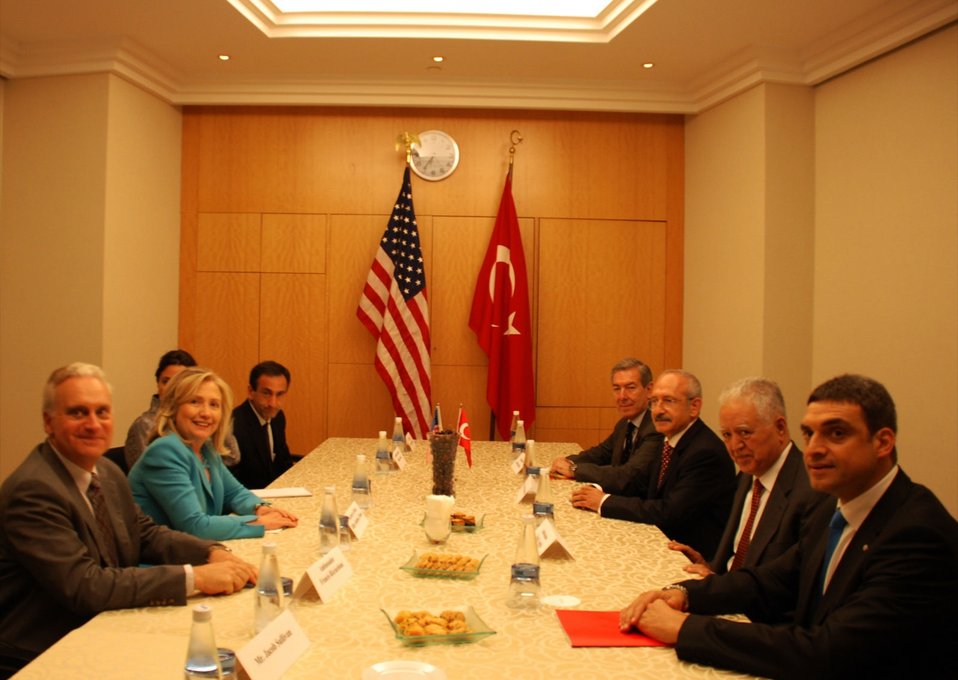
Secretary Clinton Meets With People's Republican Party (CHP) Chairman Kılıçdaroğlu

U.S. Secretary of Hillary Rodham Clinton, second from left, meets with People's Republican Party (CHP) Chairman Kemal Kılıçdaroğlu in Istanbul, Turkey, on July 16, 2011. Other participants in the meeting include, U.S. Ambassador to Turkey Francis Ricciardone, Assistant Secretary of State for European and Eurasian Affairs Philip Gordon, CHP Deputy Faruk Loğoğlu, and CPH Deputy Osman Korutürk.